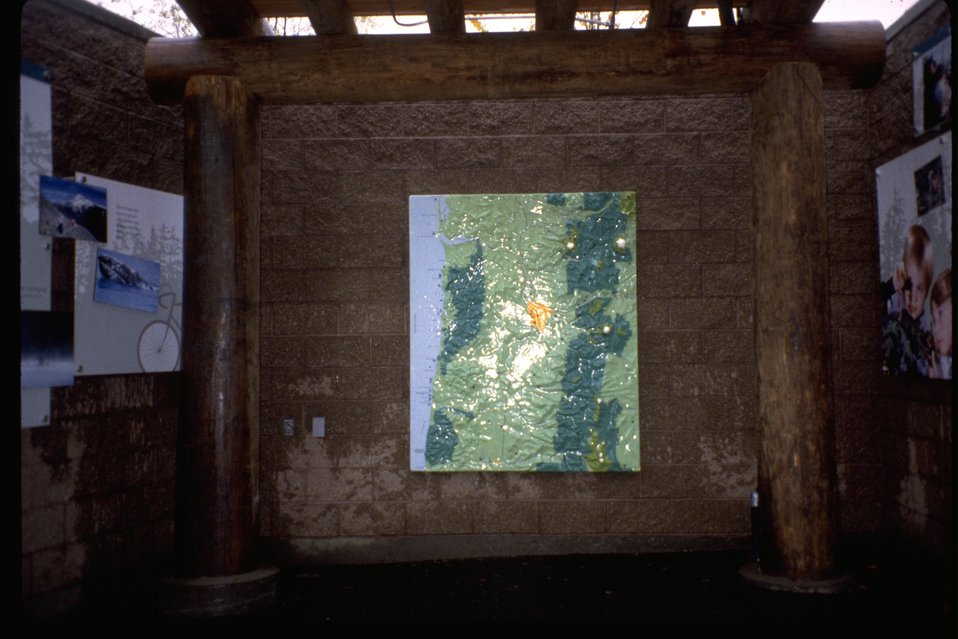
Display of interagency public lands tactile model at the Oregon Zoo.